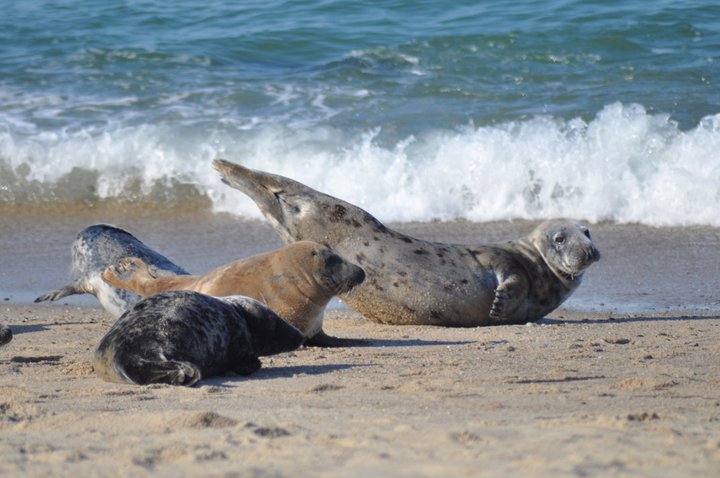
Seals at Nantucket National Wildlife Refuge in Massachusetts.